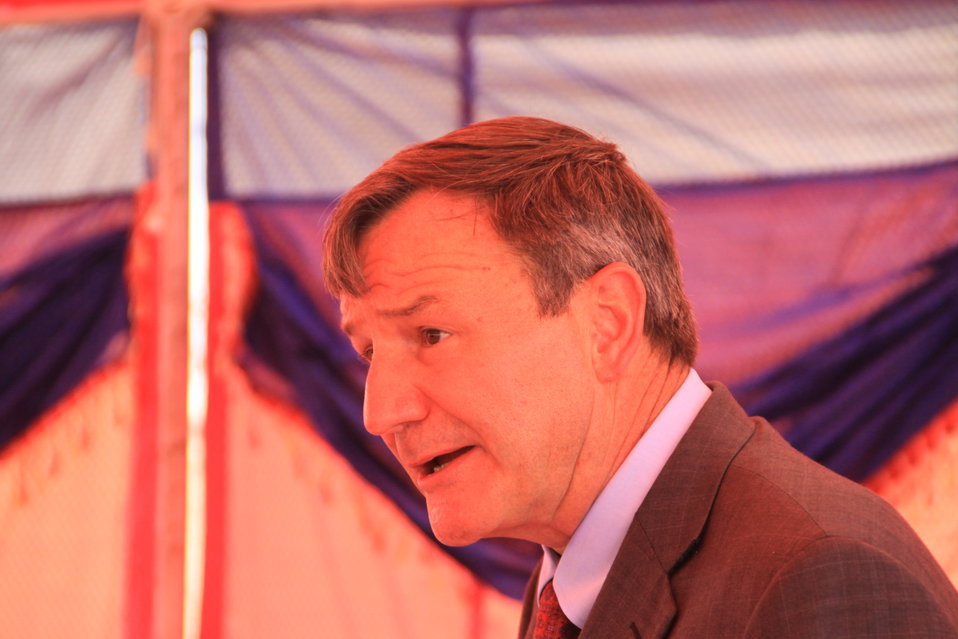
Badam Bagh Farm